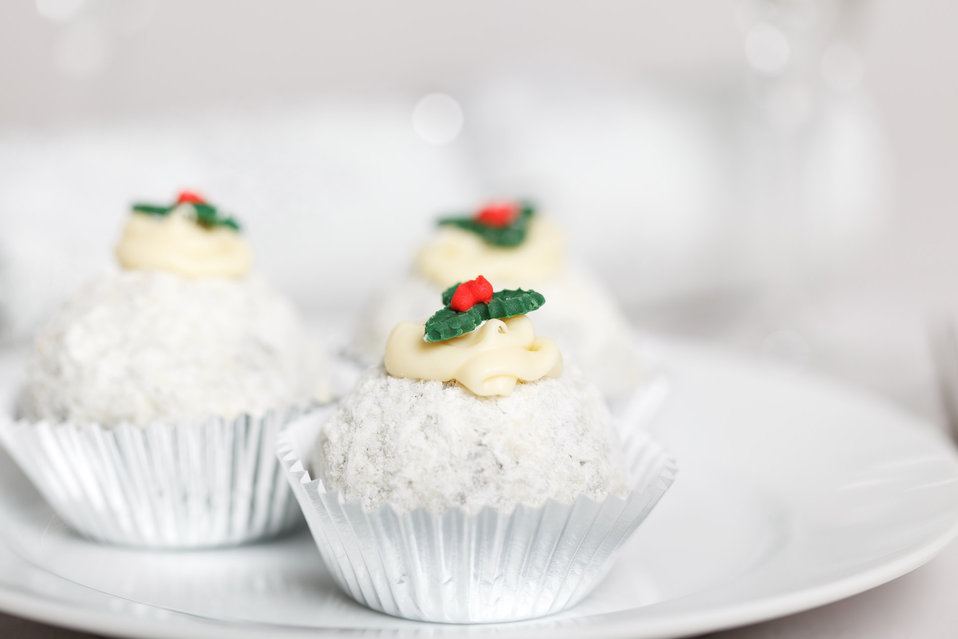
Christmas cakes with holly

Round christmas dessert with coconut and a holly on the top.